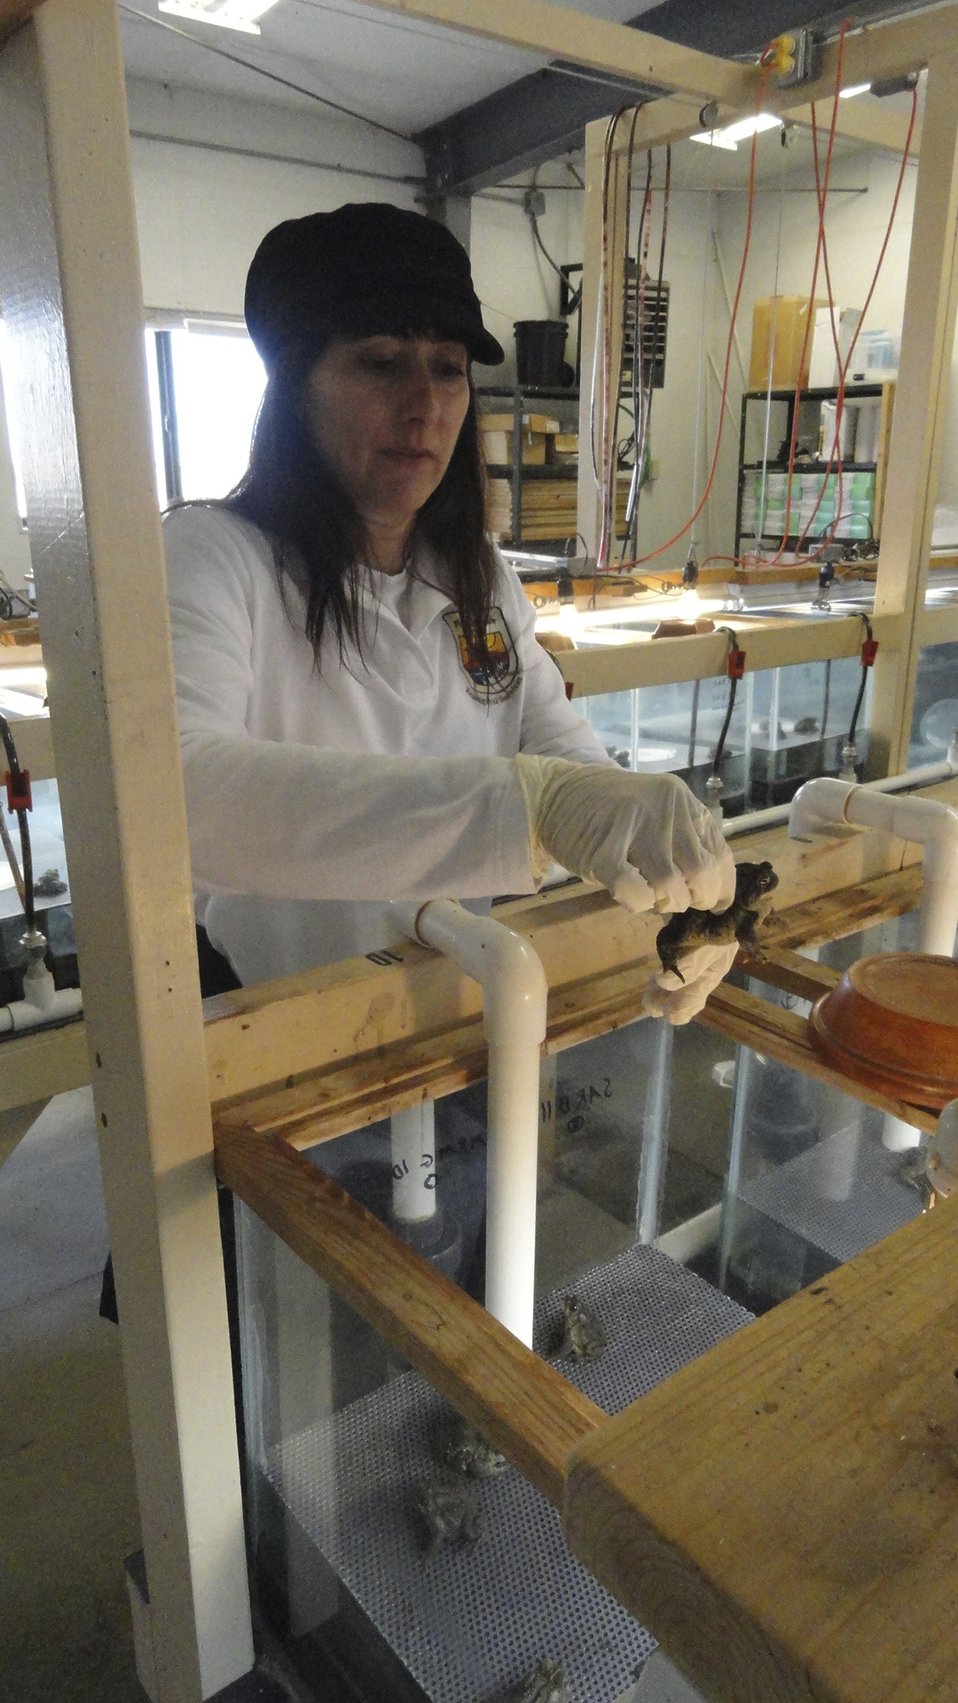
Visiting Saratoga National Fish Hatchery

In April of 2014, regional office employees visited Saratoga National Fish Hatchery to learn more about its efforts towards recovering the Wyoming toad (Bufo baxteri).

The hatchery adopted a unique role in becoming the first unit in the National Fish Hatchery System to become involved in rearing endangered amphibians. The Wyoming toad was a common sight on areas of the Laramie Plains, Albany County, Wyoming, into the early 1970s but the species' populations crashed in the mid-1970s. The Wyoming toad was listed as endangered by the U.S. Fish & Wildlife Service in January 1984. Found only in southwestern Wyoming, the Wyoming toad is considered the most endangered amphibian in North America. The hatchery maintains a captive population for breeding, rearing, and refugia, and the offspring from this program will be used for reintroduction efforts.